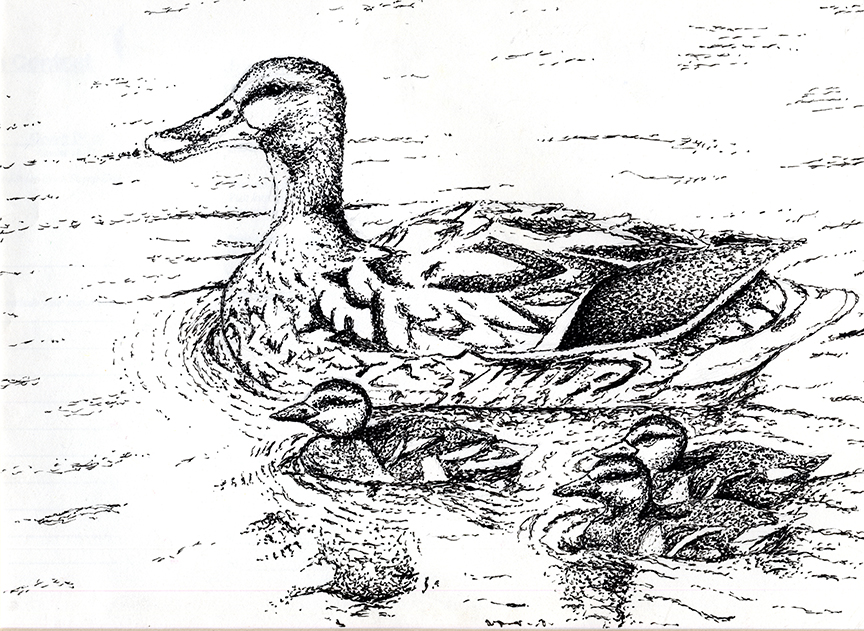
JRDuck2013WV

2013 Junior Duck Stamp Best of Show-West Virginia